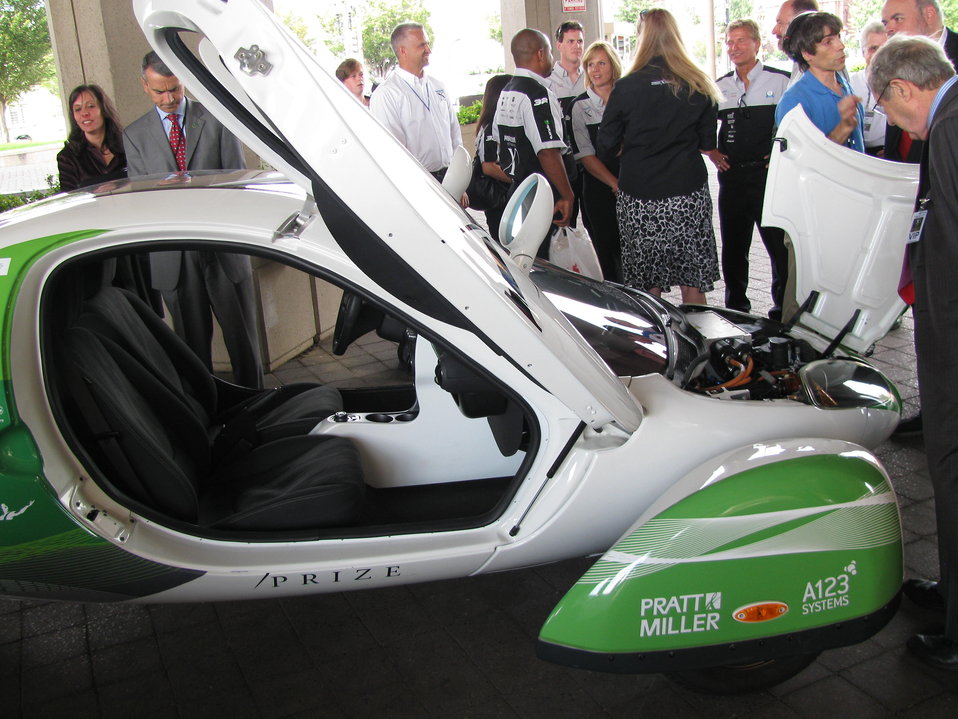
X Prize 063